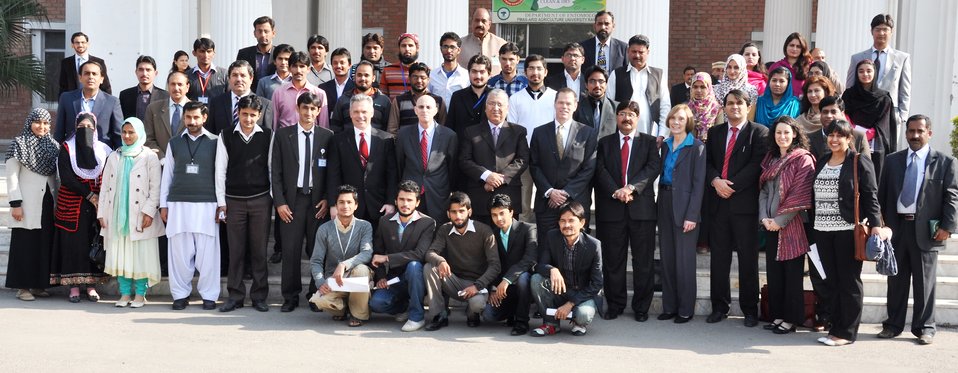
Larry Sampler, USAID’s Assistant Administrator, Office of Afghanistan and Pakistan Affairs (OAPA) and Gregory Gottlieb, Mission Director, USAID Pakistan with scholarship recipients today to celebrate their academic achievement and discuss their progress